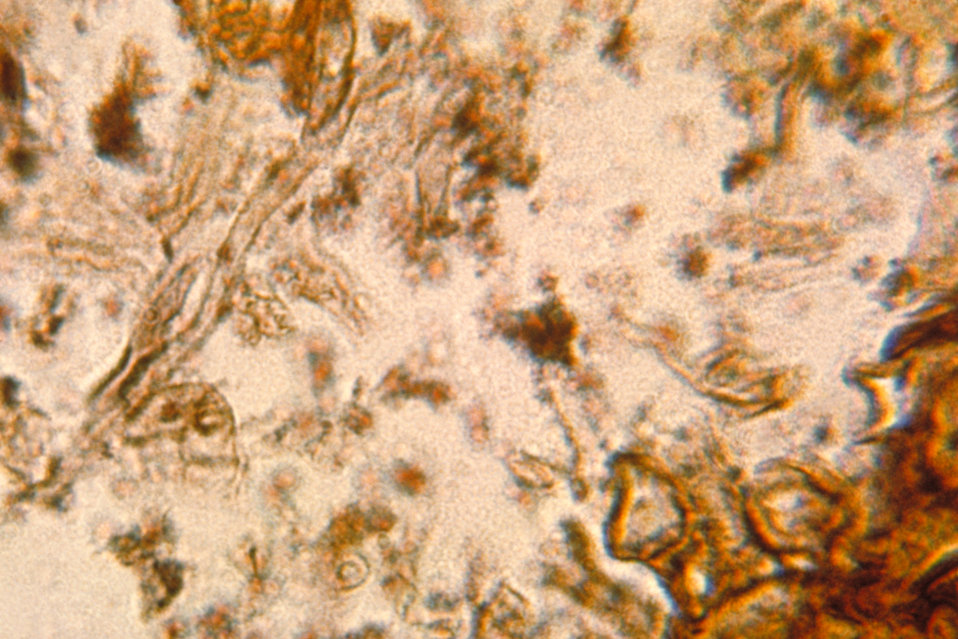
This micrograph depicts the histopathologic changes seen in 'black grain' mycetoma in a dog due to Curvularia geniculata.